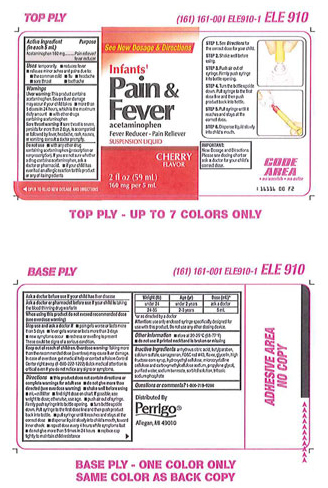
Recalled - Acetaminophen infant suspension liquid

November 1, 2013 – Product Recall – Perrigo Initiates Nationwide Voluntary Product Recall of Acetaminophen Infant Suspension Liquid, 160 Mg/5 Ml, Due to a Potential Defect with the Co-packaged Oral Syringe.